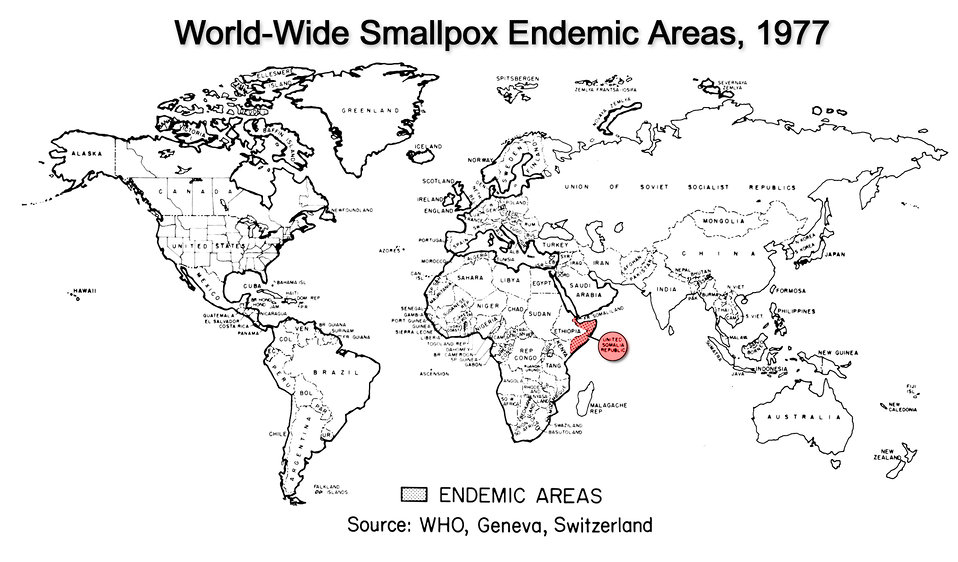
At the time, this 1977 map revealed the reduced distribution of smallpox, and the country in which it was endemic.